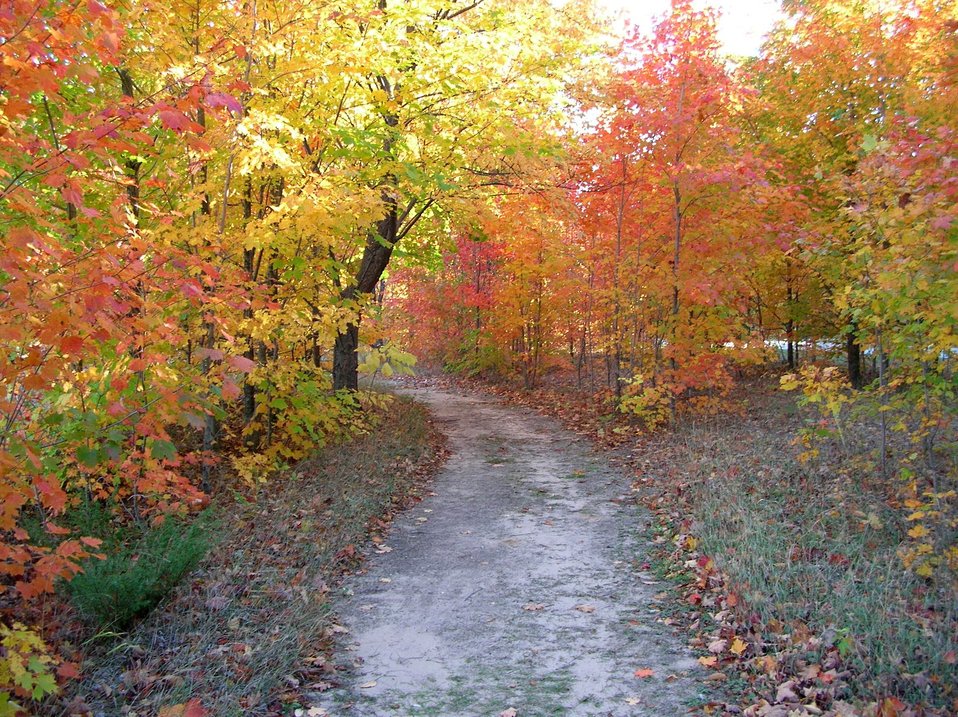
Fall foliage gracing a wooded path